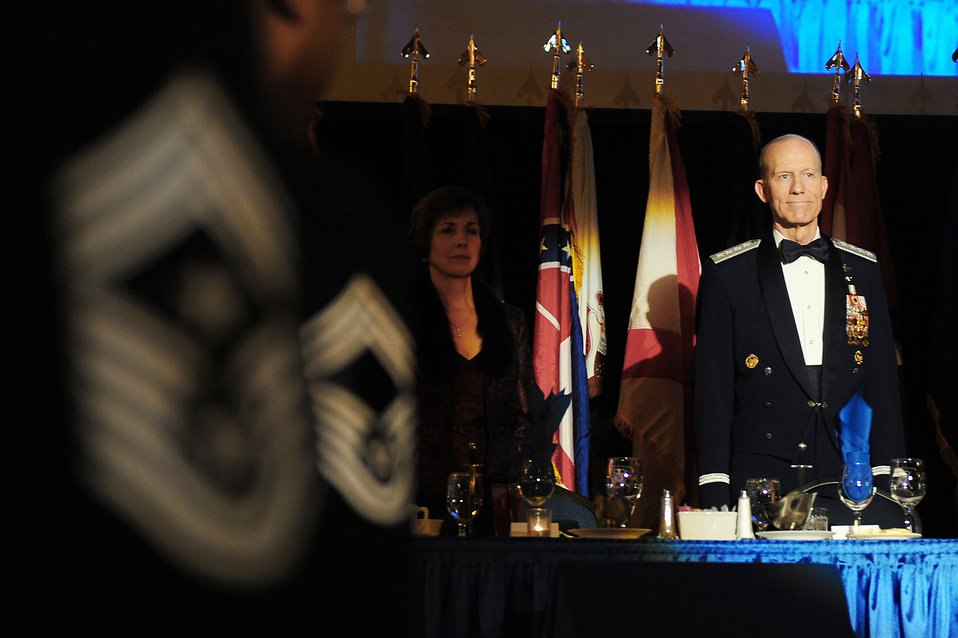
Order of the Sword

Retired Gen. John D.W. Corley stands at the head table with his wife, Alice, while the audience of 500 enlisted Airmen look on during an Order of the Sword Ceremony Jan. 13, 2010 in Omaha, Neb. The Order of the Sword is the highest award presented by the Air Force enlisted corps. General Corley is the former commander of Air Combat Command.